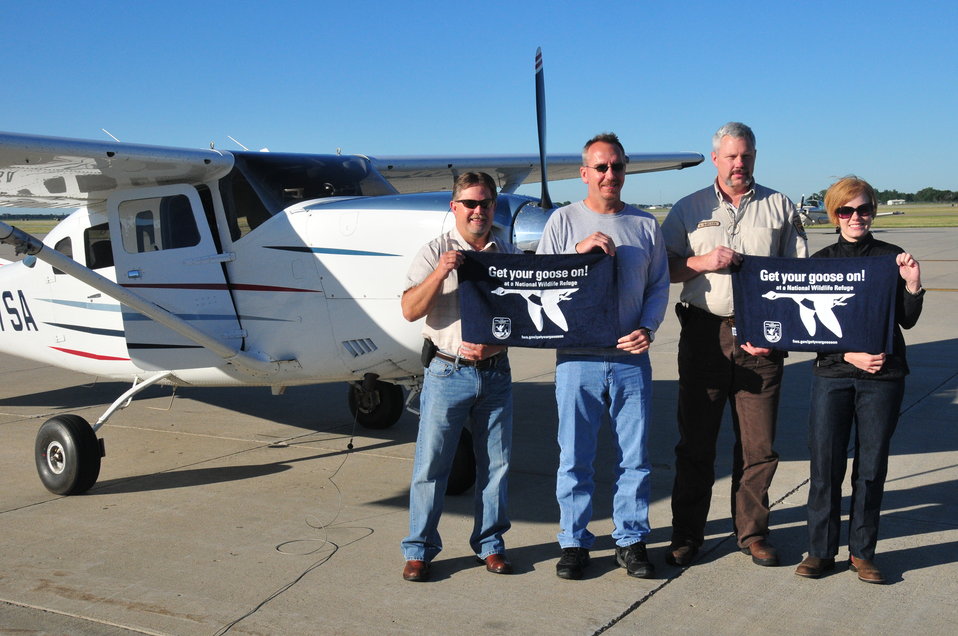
Get Your Goose On!

The national meeting for regional chiefs of the National Wildlife Refuge System is held three times a year in different locations around the country. This 2012 meeting took place in McPherson County, South Dakota, and focused on the Dakota Grassland Conservation Area.

This photo was taken on the Wade Weiszharr and Family Ranch, which contains perpetual U.S. Fish and Widlife grassland and wetland easements. This site is also located in the heart of Prairie Pothole Region, making it extremely productive migratory bird habitat and a great place to “Get your goose on!”

In this photo Aaron Archibeque, Jeff Ruppert, Sean Bayless, and Serena Selboe 'get their goose on' next to the region's Cessna 206! This aircraft is primarily used to monitor grassland and wetland easements in the area!